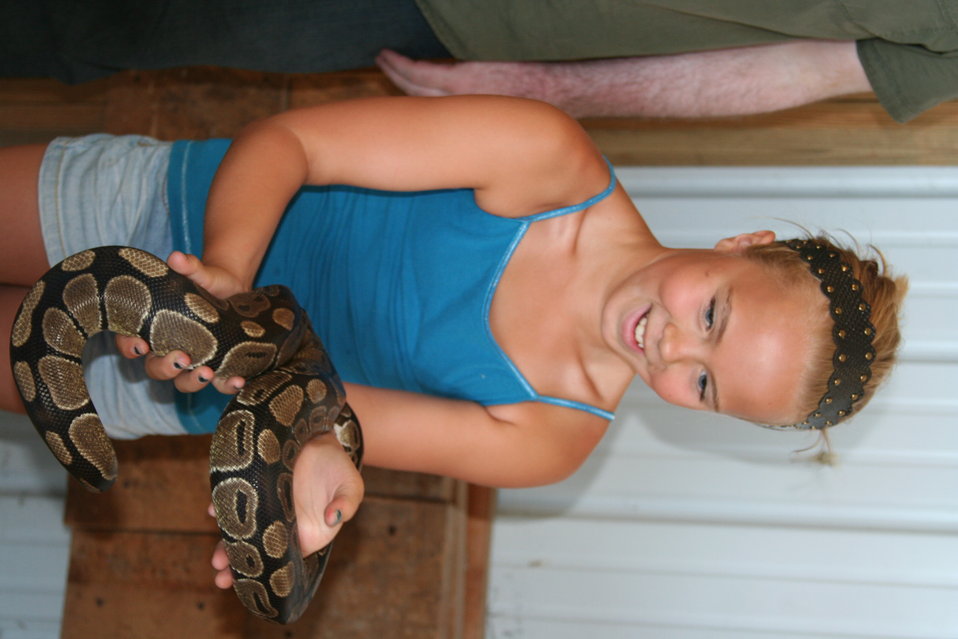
2011 Huron Prairie Fest